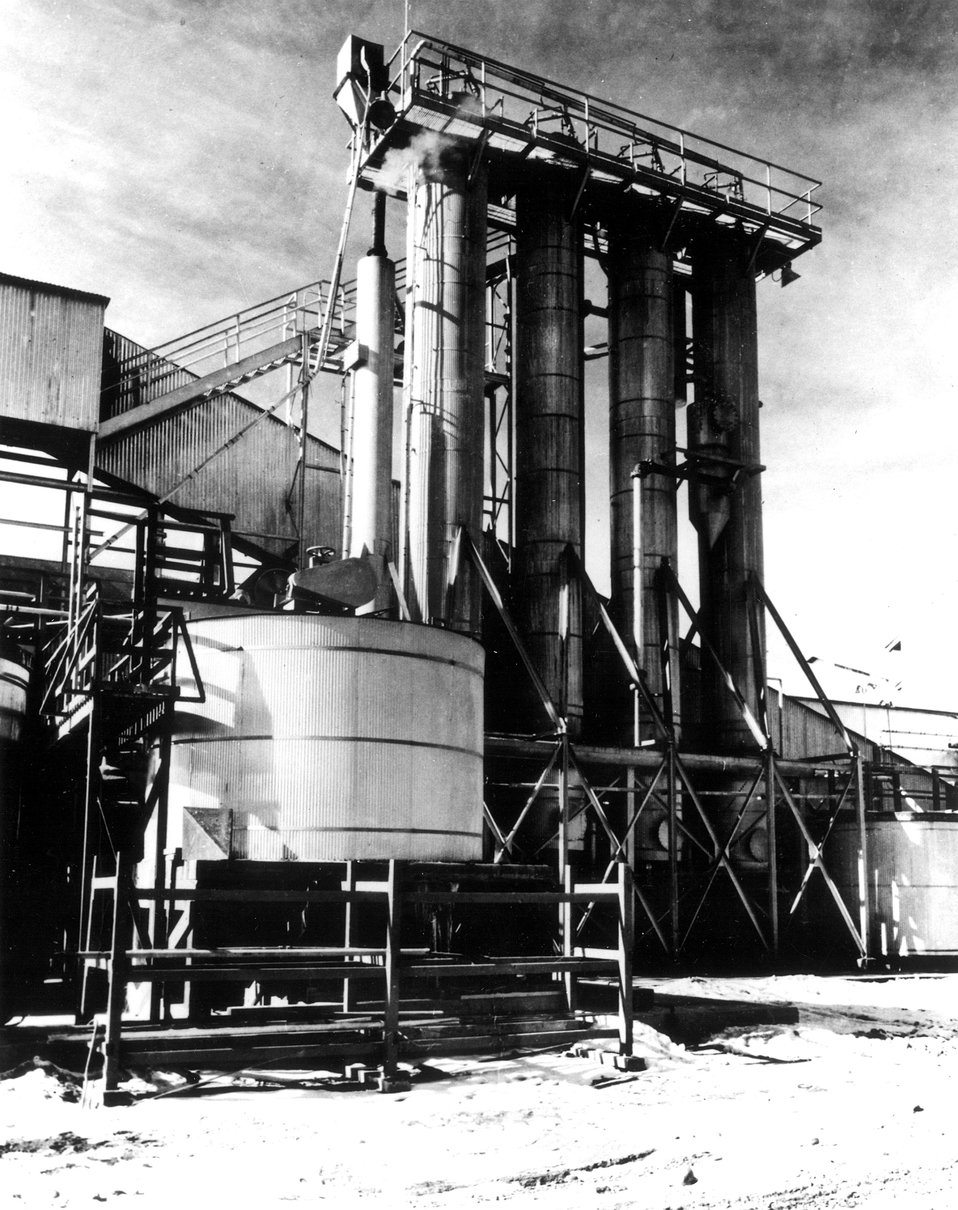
Grand Junction Pilot Plant (Alkaline Leaching of Uranium Ores). c. 1958